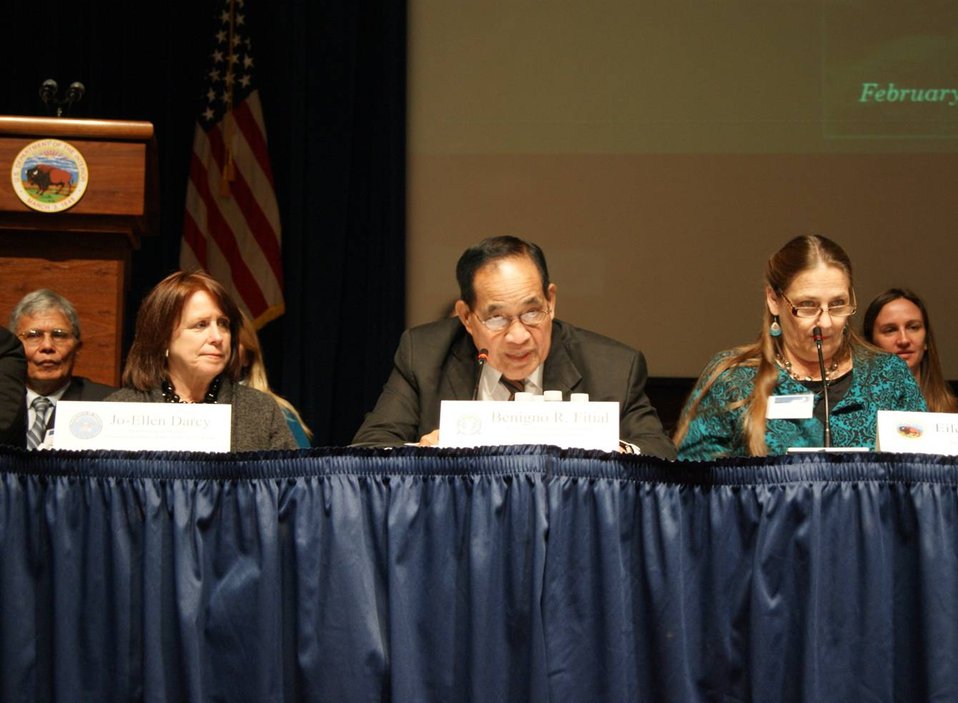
Coral Reef Task Force - Winter Meeting 2012